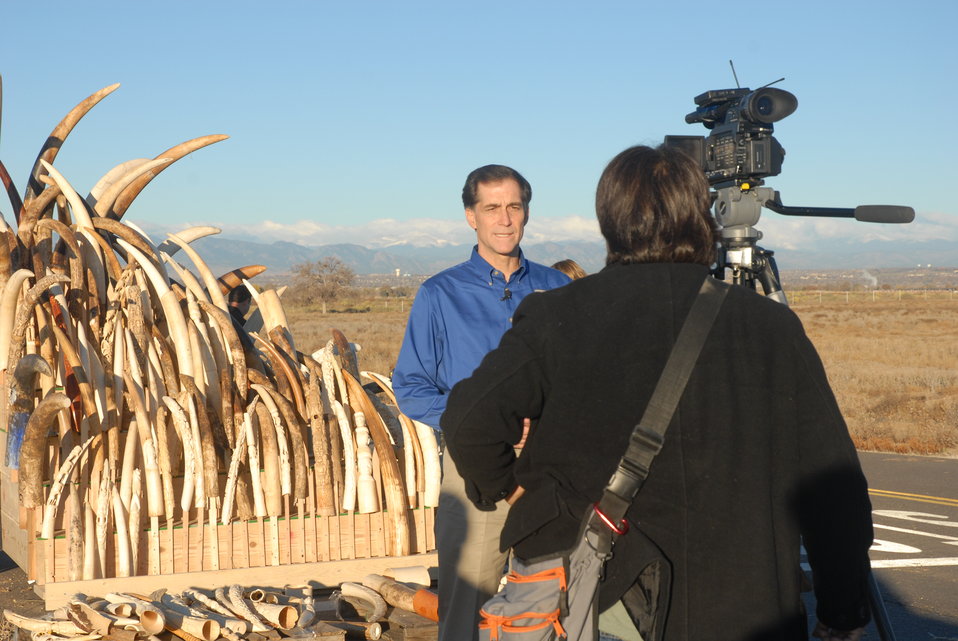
U.S. Fish and Wildlife Service Director Dan Ashe hopes this effort will raise awareness on elephant poaching and help to ensure the survival of this iconic species.